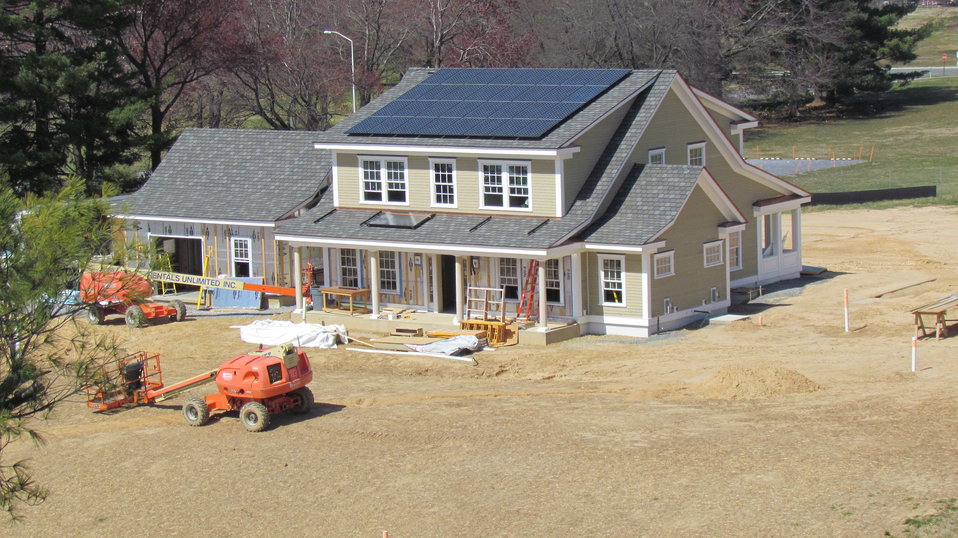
Aerial view showing partial installation of solar thermal system on porch roof and siding on front of facility.